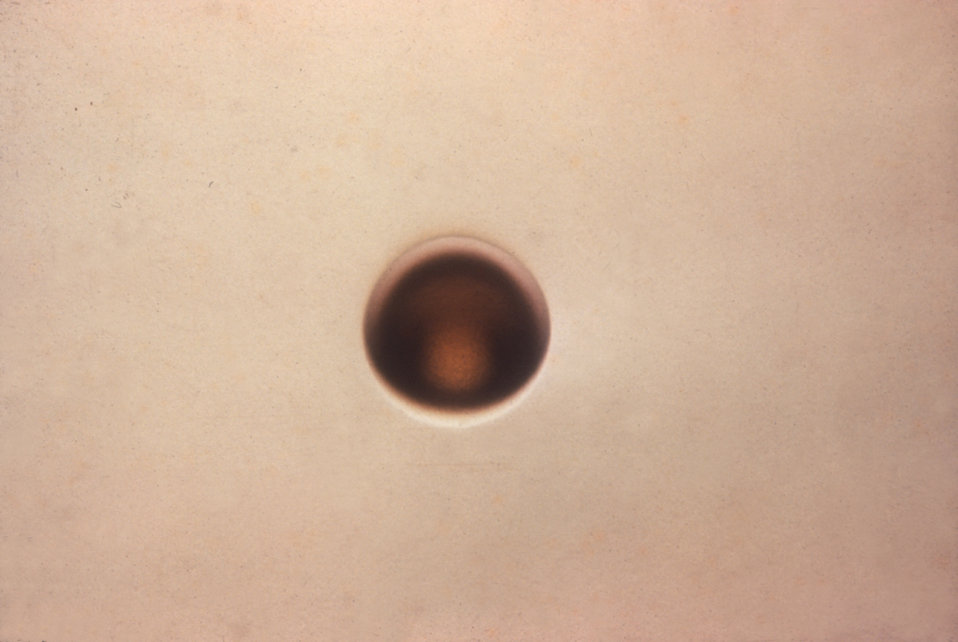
This is an enlargement of a Type-1 colony of Neisseria gonorrhoeae bacteria.